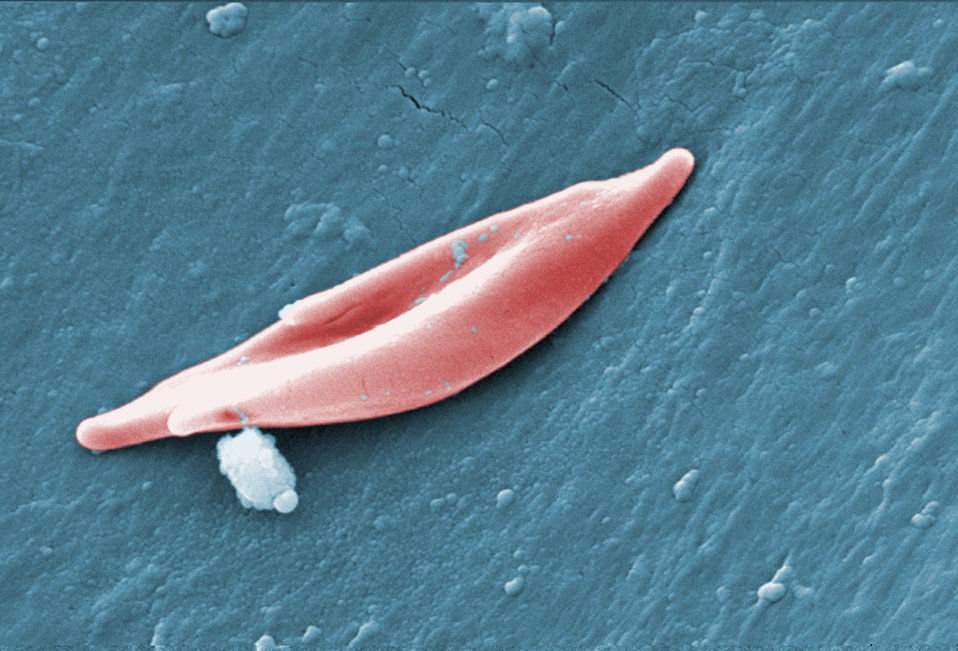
This digitally-colorized scanning electron micrograph (SEM) revealed some of the ultrastructural morphology of a sickle cell red blood cell (RBC) found in a blood specimen of an 18 year old female patient with sickle cell anemia, (HbSS); People who have this form of sickle cell disease inherit two sickle cell genes ('S'), one from each parent. This is commonly called 'sickle cell anemia', and is usually the most severe form of the disease.